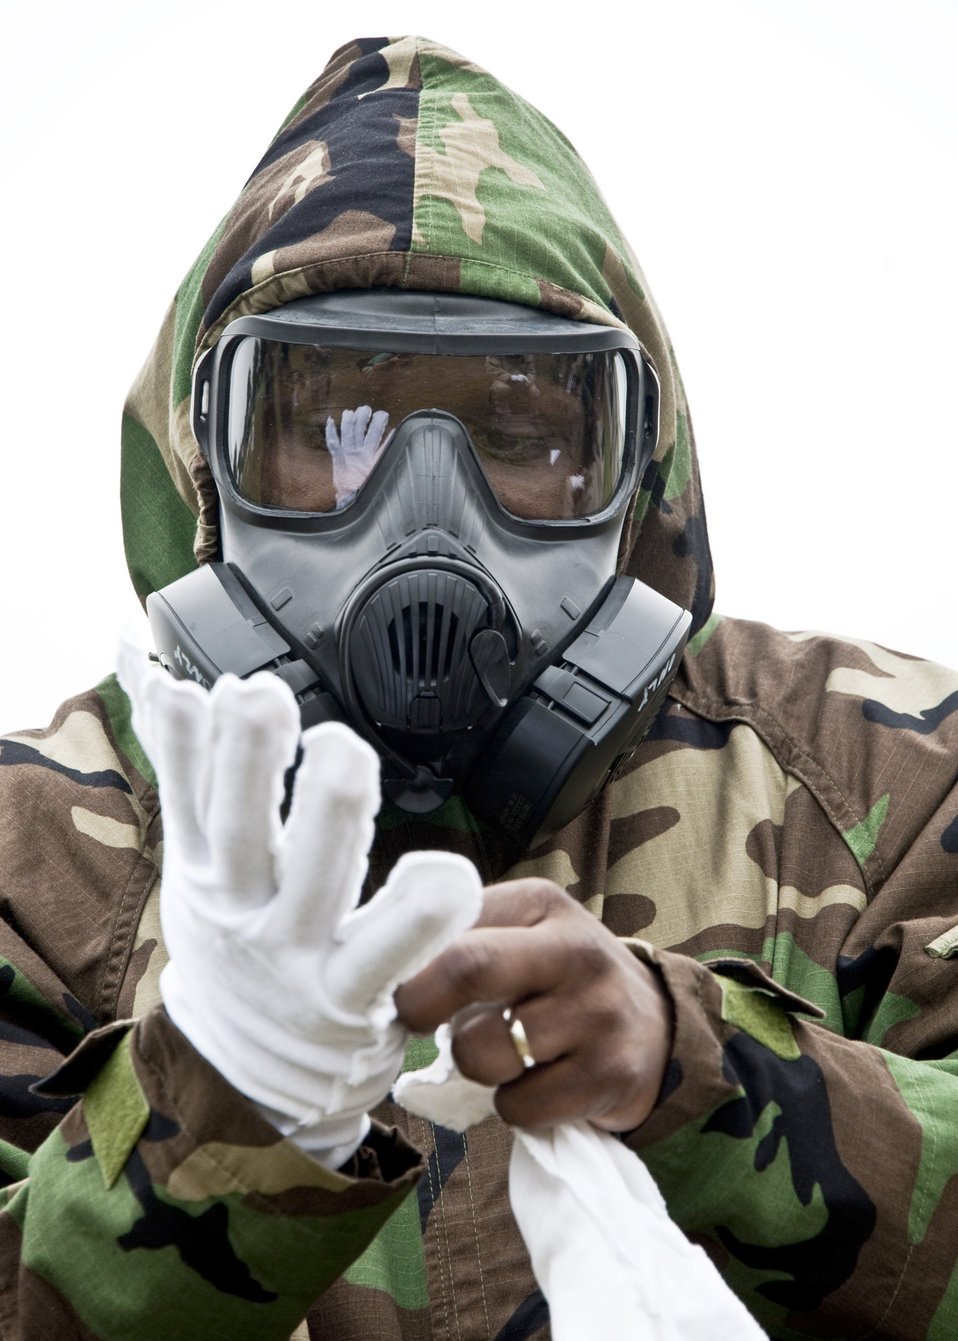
Operational readiness exercise

An Airman puts on chemical gear Feb. 24, 2011, during an operational readiness exercise at Eglin Air Force Base, Fla.